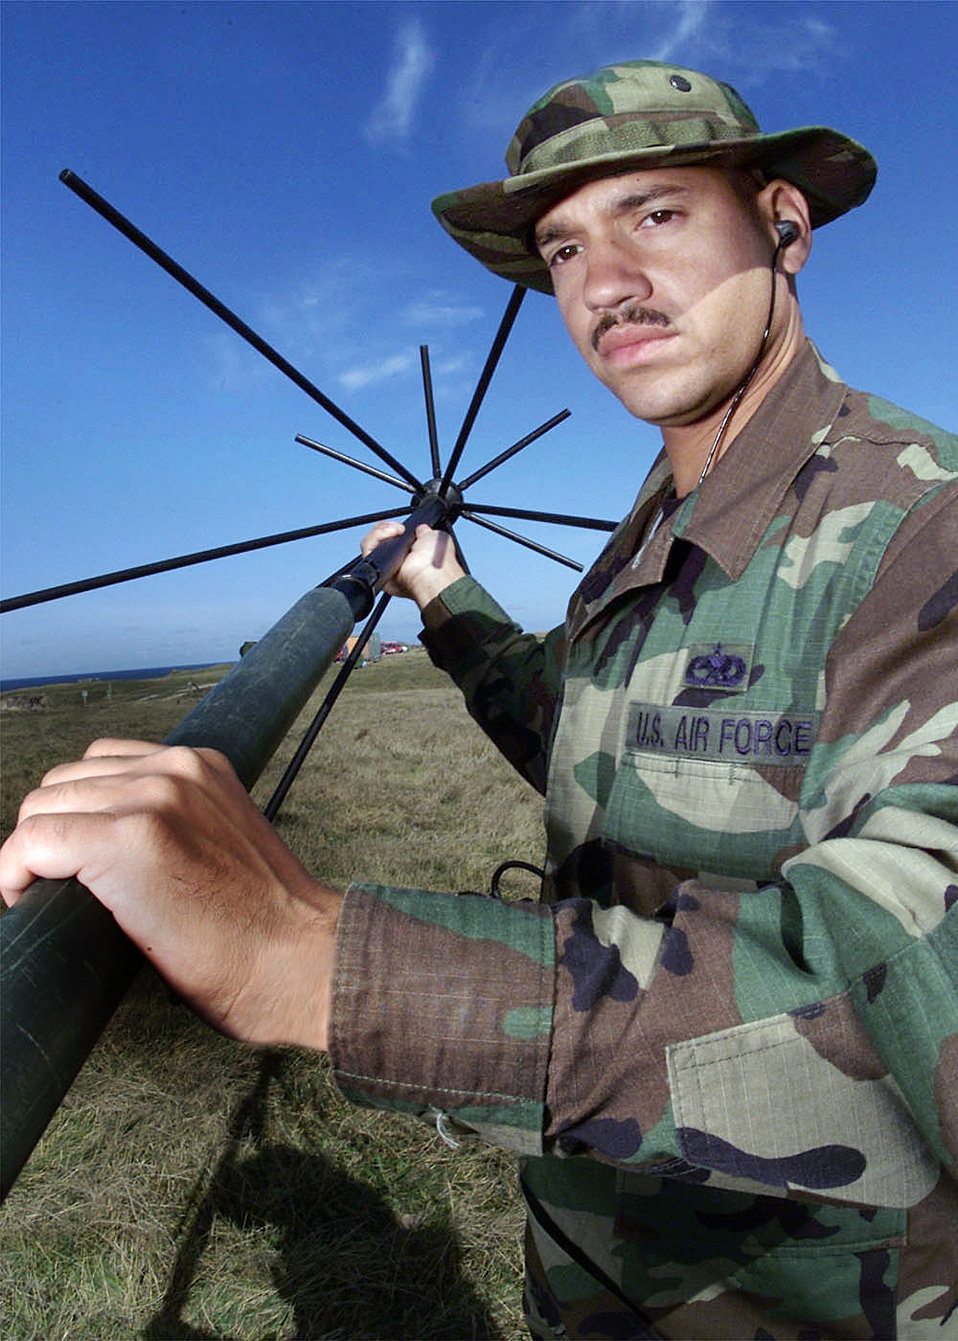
Radio Man

BOVBJERG, Denmark -- Tech. Sgt. John Maldonado, noncommissioned officer in charge of ground radio maintenance, 603rd Air Control Squadron, Aviano Air Base, Italy, sets up a UHF/ VHF antenna for radio transmissions on August 23, 2000. The 603rd deployed to Bovbjerg, Denmark, in support of an annual Tactical Fighter Weaponry exercise